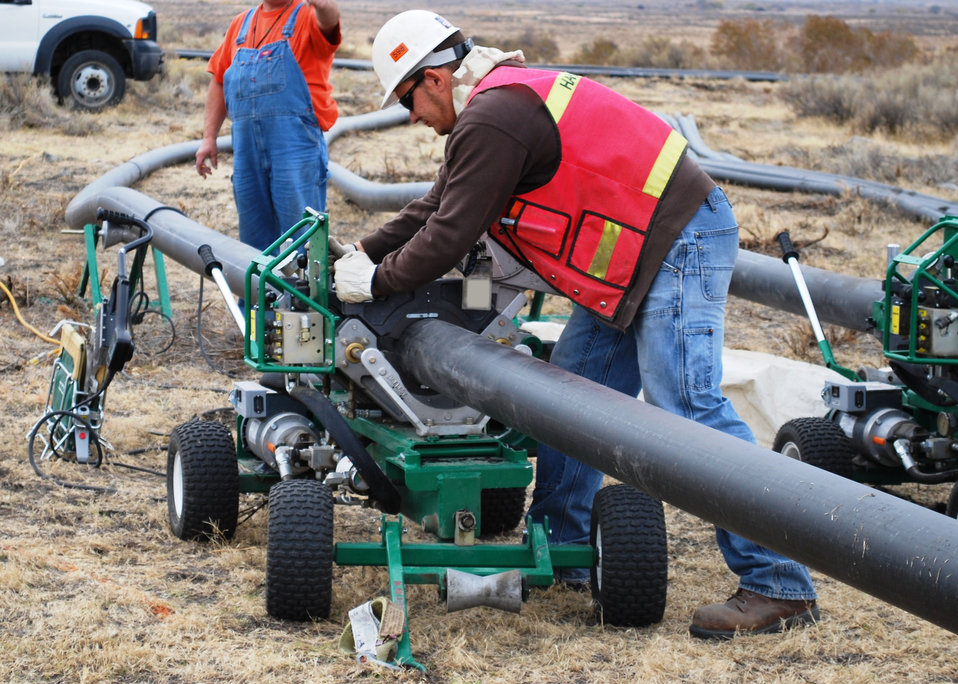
Bonding HDPE for DX Groundwater Treatment Facility

A worker bonds two pieces of high-density polyethylene (HDPE) piping. CH2M HILL is installing over 42 miles of HDPE piping to connect the 100-DX Groundwater Treatment Facility on the Hanford Site.